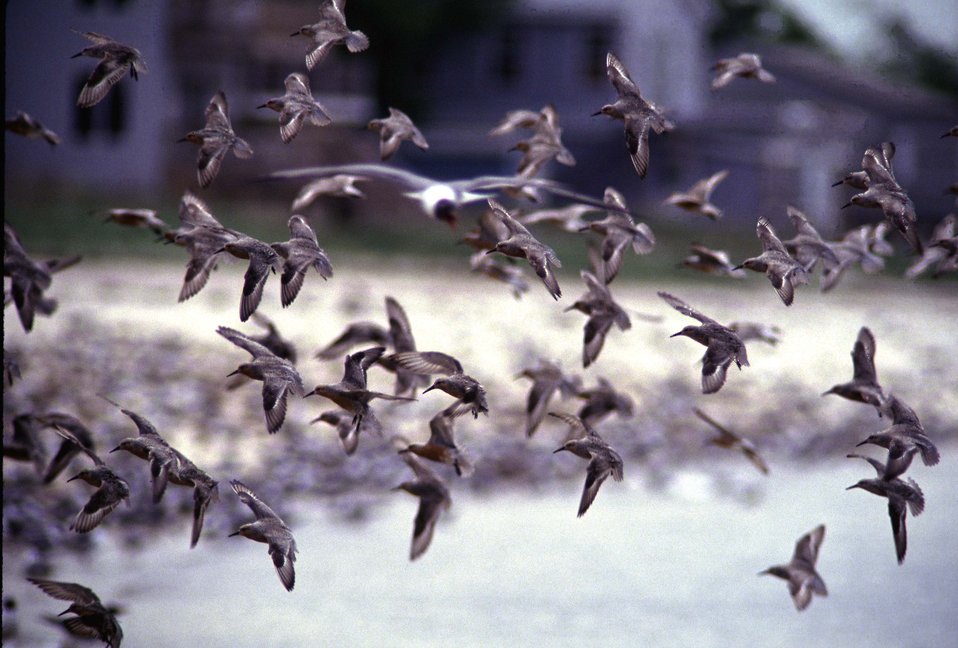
Birds In Flight

Reed's Beach, NJ.